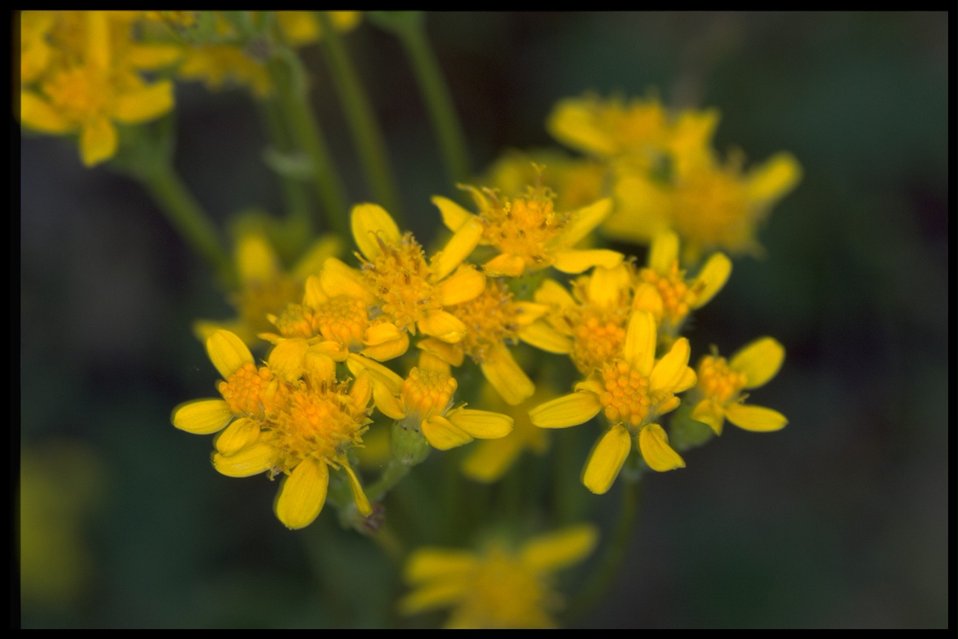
Closeup shot of Senecio integerimus.